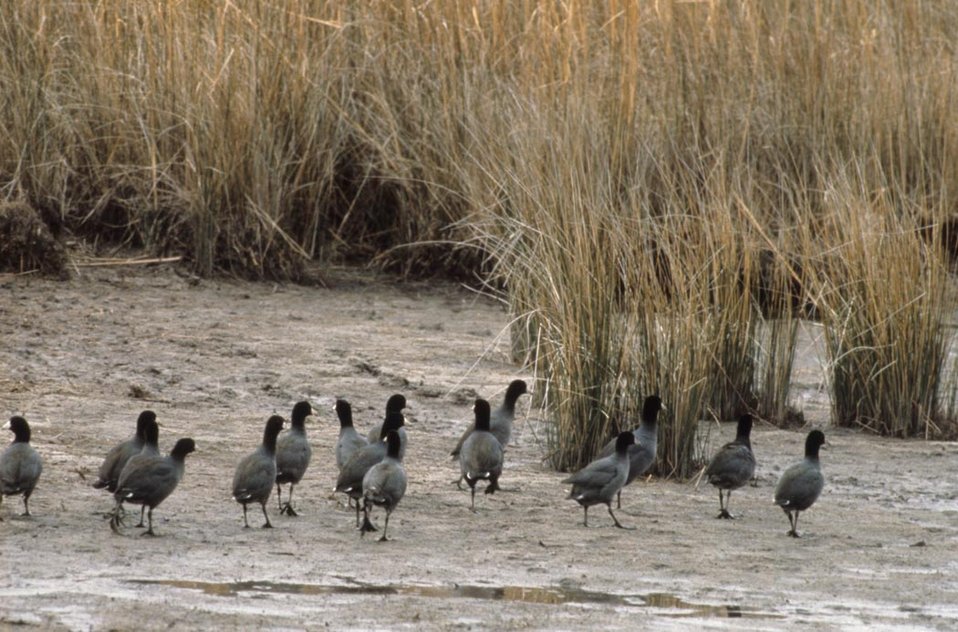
American Coots.